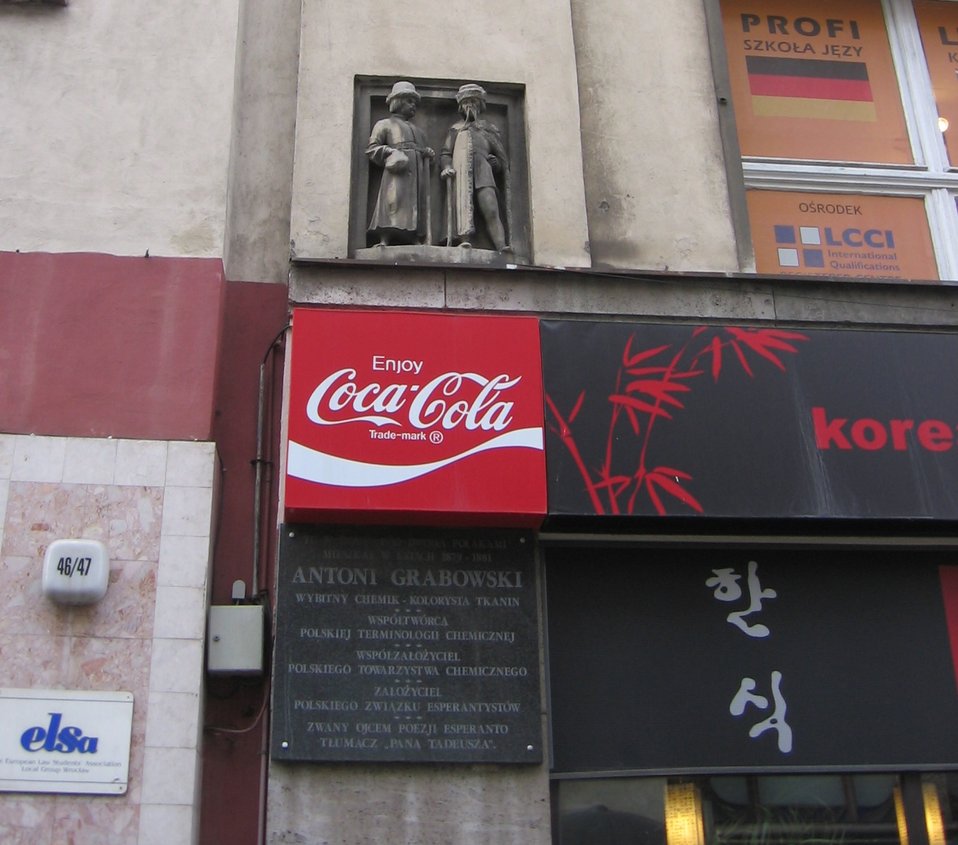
'Under Green Pumpkin And Two Poles' building in Wrocław, 43/45 Kuźnicza Street: relief of 'two Poles' Polski: Kamienica 'Pod Zieloną Dynią i Dwoma Polakami' przy ul. Kuźniczej 43/45 (na styku z posesją 46/47) - płaskorzeźba 'dwóch Polaków'; poniżej tablica pamiątkowa poświęcona Antoniemu Grabowskiemu, polskiemu chemikowi, który mieszkał pod tym adresem w latach 1879-1881